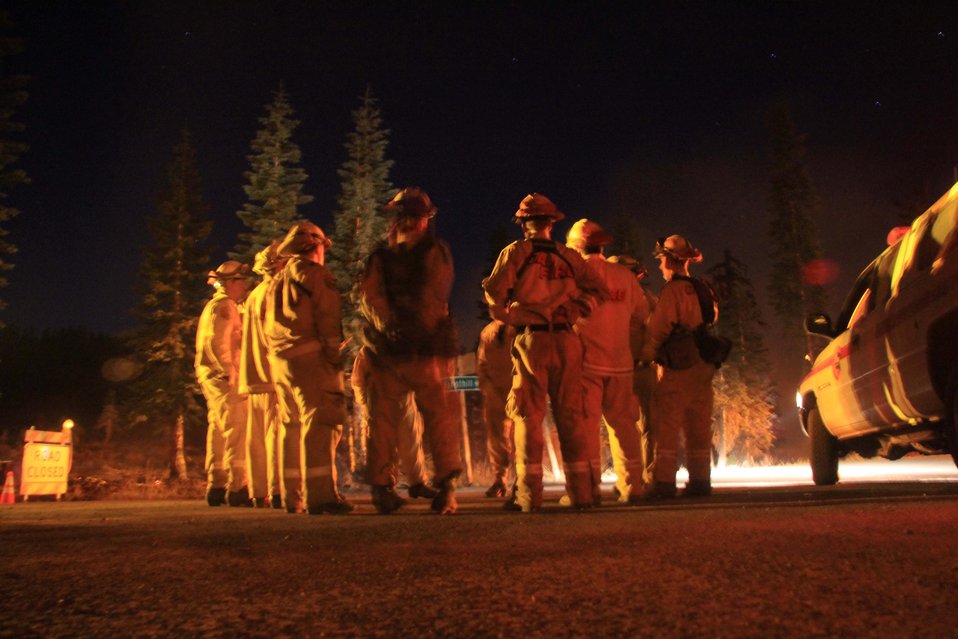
Engine crewmembers from CALFIRE receive a brief before night operations begin at the American Fire. The American Fire in Tahoe National Forest near Foresthill, CA began on Aug. 10, 2013 is under investigation. The fire has consumed approximately 24,935 acres and is approximately 88% contained.